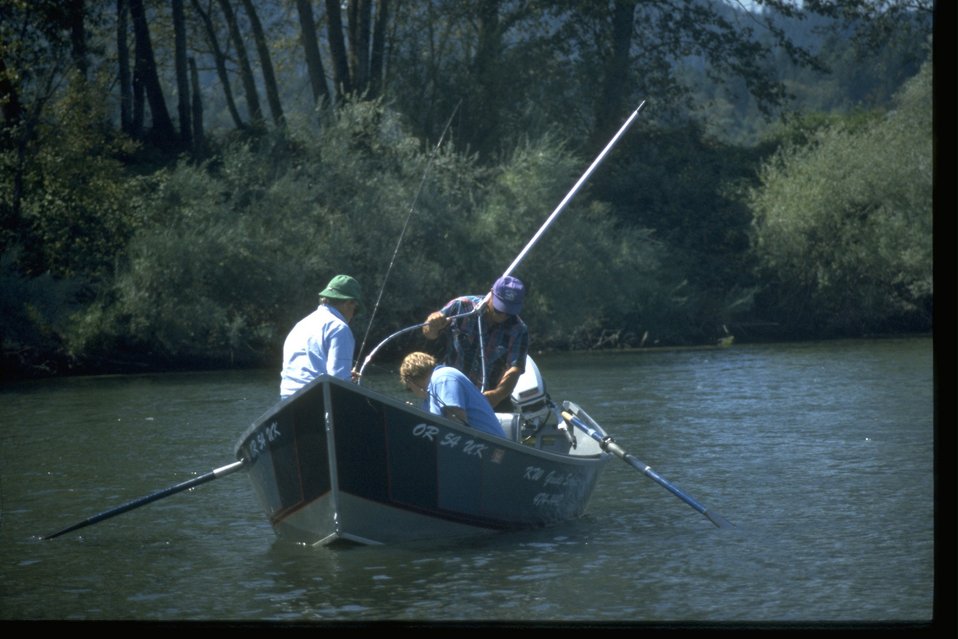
Fishing from small fishing boat on the Rogue River.